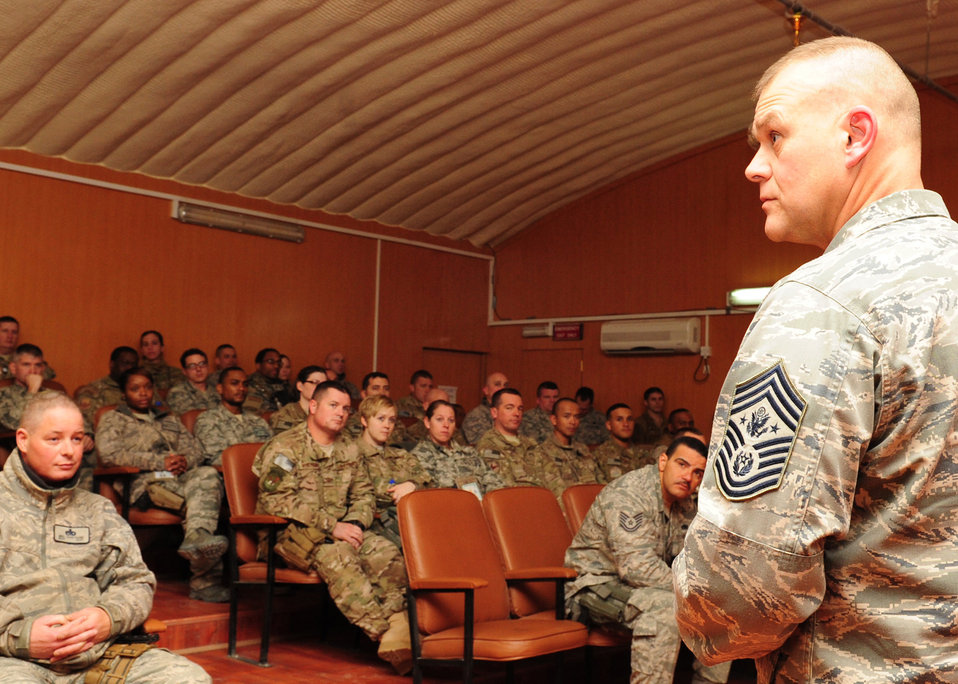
CMSAF discusses top Air Force issues

Members from the 438th Air Expeditionary Wing met with Chief Master Sgt. of the Air Force James A. Roy at Kabul International Airport, Afghanistan, Feb. 1, 2012. Roy discussed resiliency, leadership, budget cuts and educational benefits.